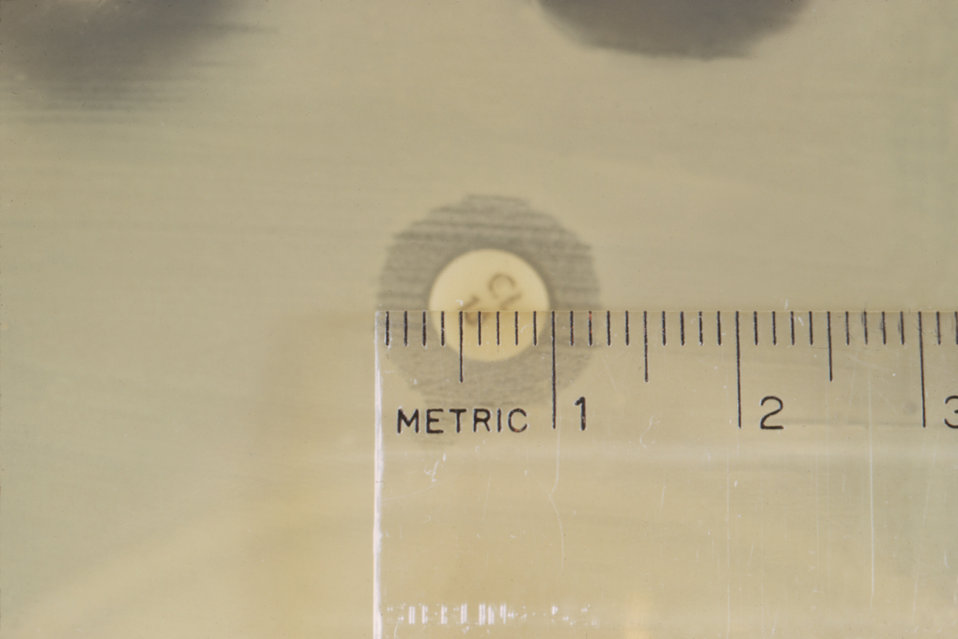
Note the zone of inhibition around this antibiotic-impregnated paper disk during an antibiotic sensitivity test.